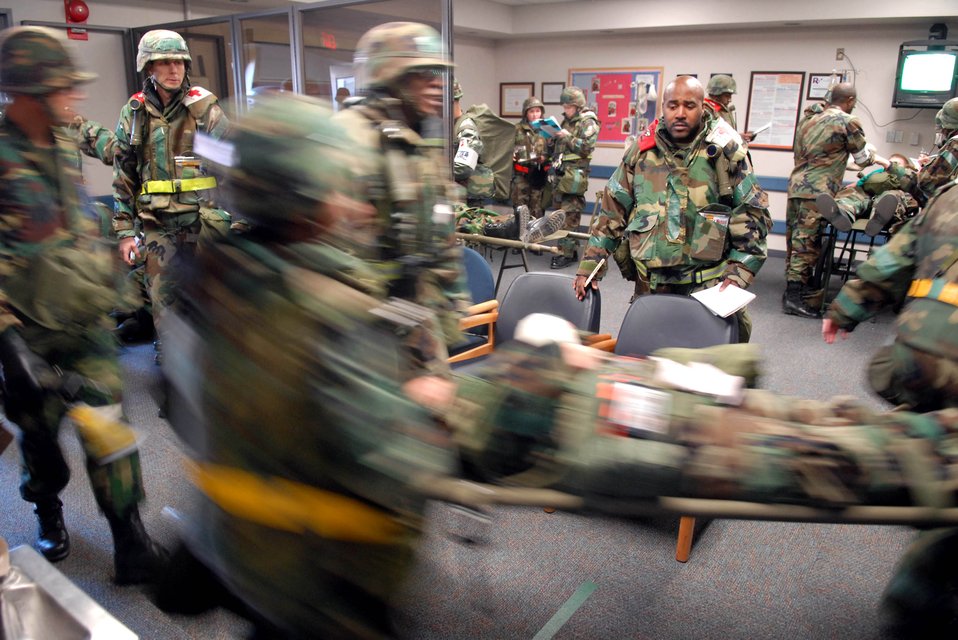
Squadron deployment tests Kunsan's readiness

U.S. Air Force and the South Korea air force airmen escort a patient to triage after a mass causality scenario during the peninsula-wide operations readiness exercise Jan. 16 at Kunsan Air Base, South Korea. This training scenario between the South Korea air force and 8th Medical Group Airmen and demonstrates the teamwork necessary to carry out the combined mission of the two allies stationed at Kunsan AB.